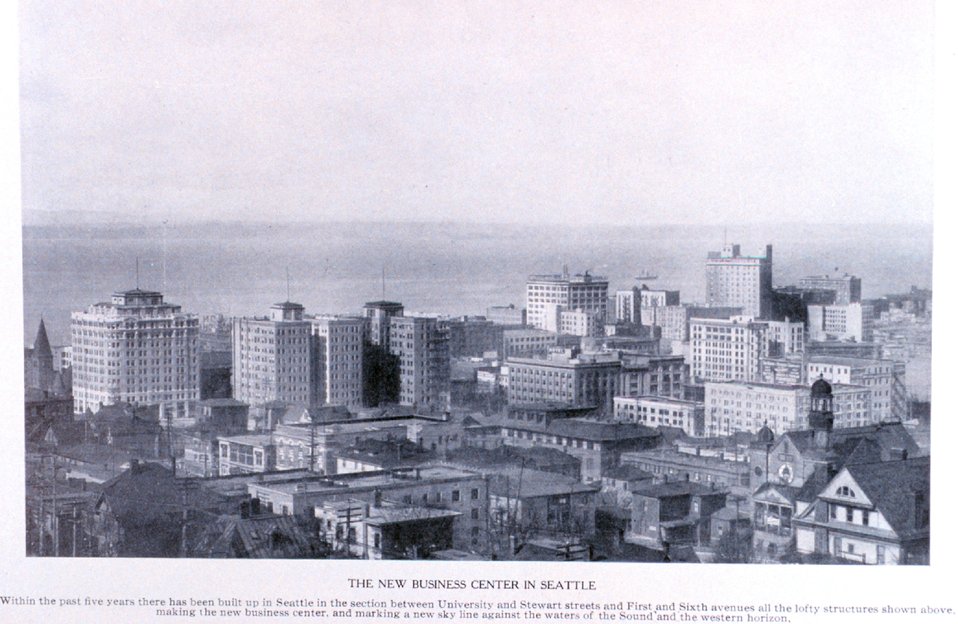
'The New Business Center in Seattle'. In: 'Puget Sound and Western Washington Cities-Towns Scenery', by Robert A. Reid, Robert A. Reid Publisher, Seattle, 1912. P. 71.